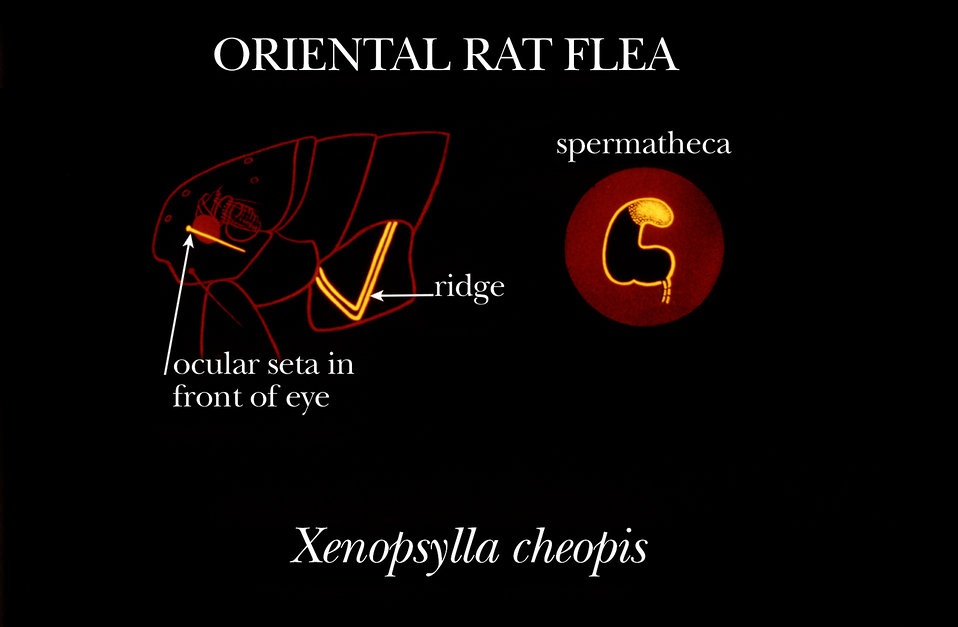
This diagram shows some of the identifying morphologic characteristics of the 'Oriental rat flea', Xenopsylla cheopis.